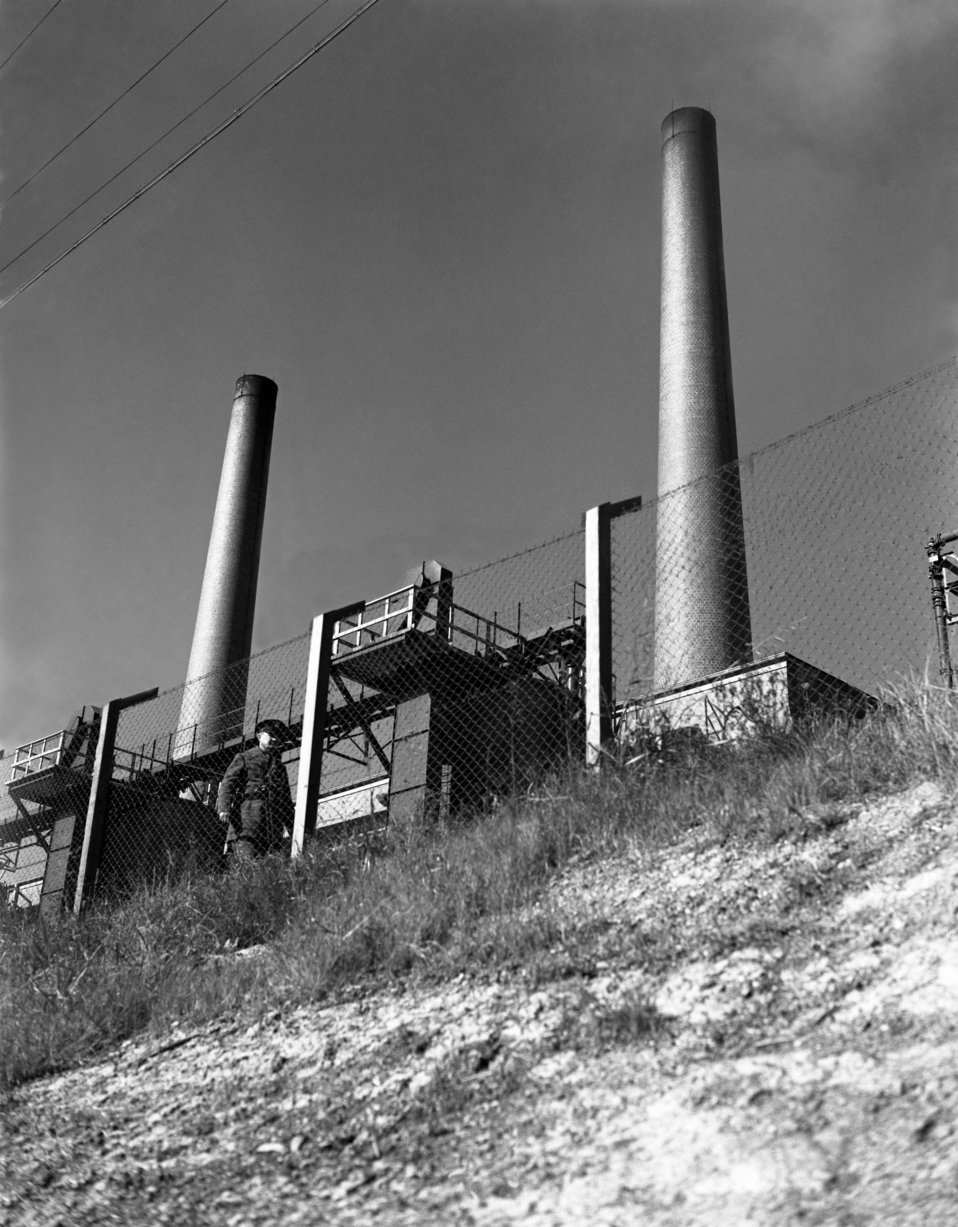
Y-12 Tennessee Eastman Plant Oak Ridge 1946

3283-6aDOE photo Ed Westcott 1946 Oak Ridge Tennessee